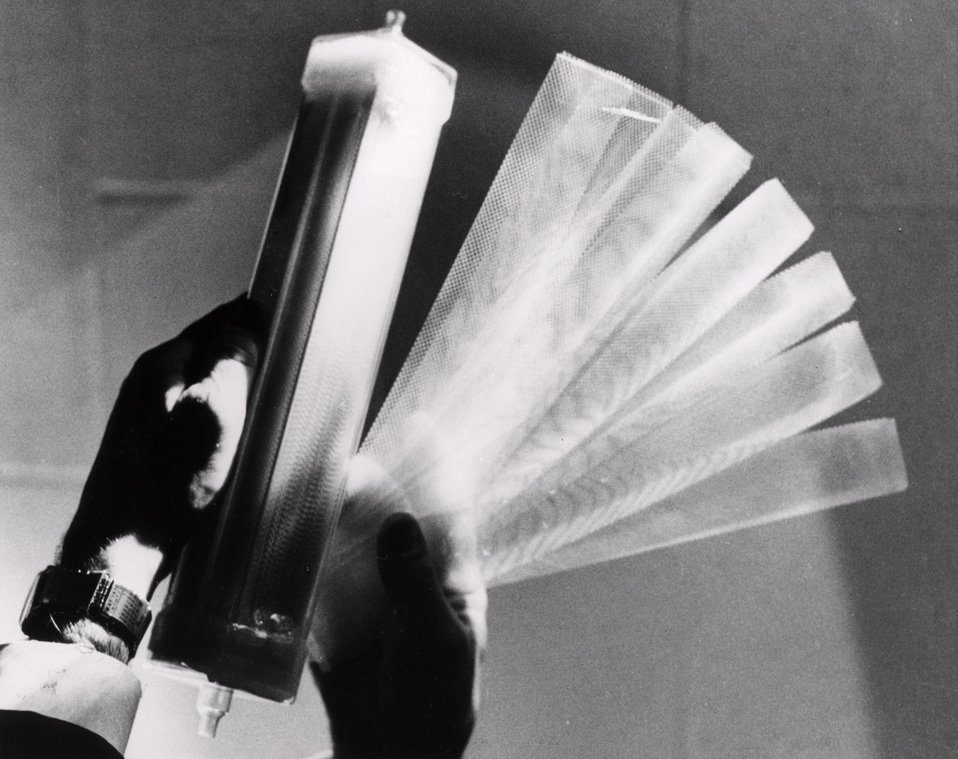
Successful search for special adhesives for a synchrotron at AEC's National Laboratory near Chicago also solved the major problem in developing the artificial kidney--the bonding of many short lengths of plastic tubing. Circa 1970.